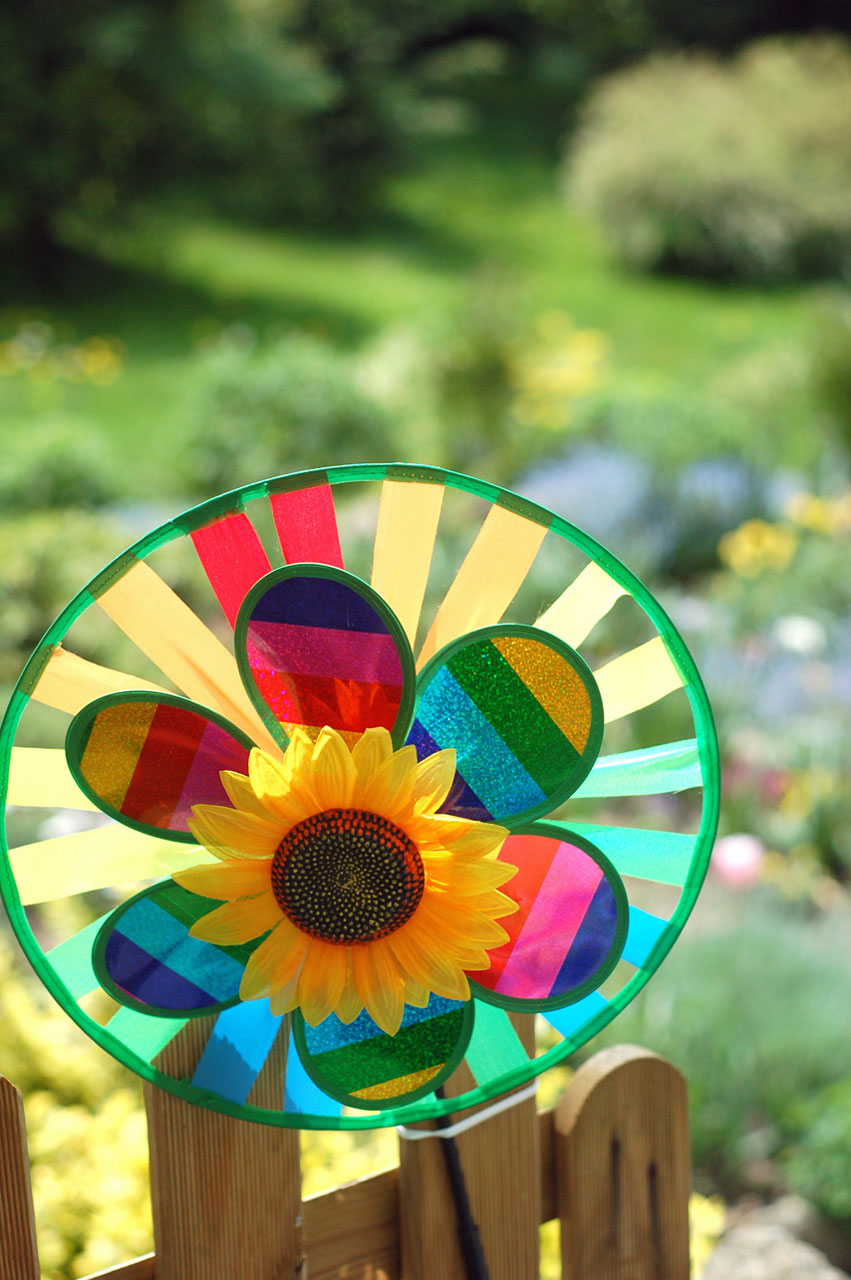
Pinwheel

Rainbow-coloured toy pinwheel.